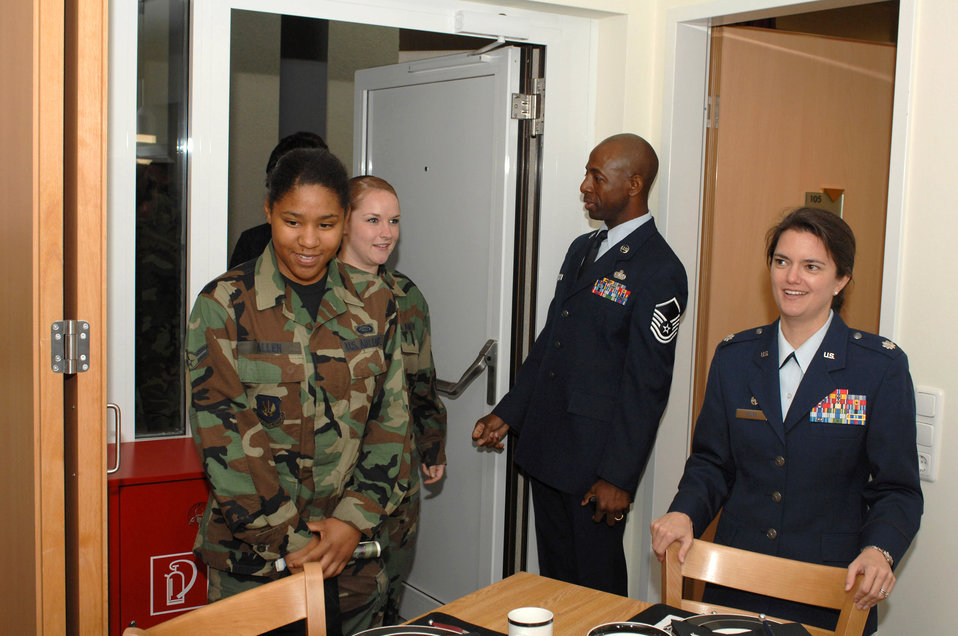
New dorms boost quality of life for Spangdahlem Airmen

Lt. Col. Kathryn Kolbe (right) tours a new dormitory with Airmen May 10 at Spangdahlem Air Base, Germany. Colonel Kolbe is commander of the 52nd Civil Engineer Squadron.